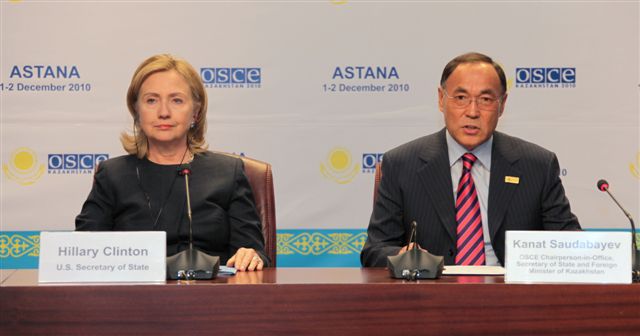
Secretary Clinton Holds a Press Conference With Kazakh Foreign Minister Saudabayev

U.S. Secretary of State Hillary Rodham Clinton Secretary Clinton holds a press conference with Kazakh Foreign Minister Kanat Saudabayev in Astana, Kazakhstan, on December 1, 2010.